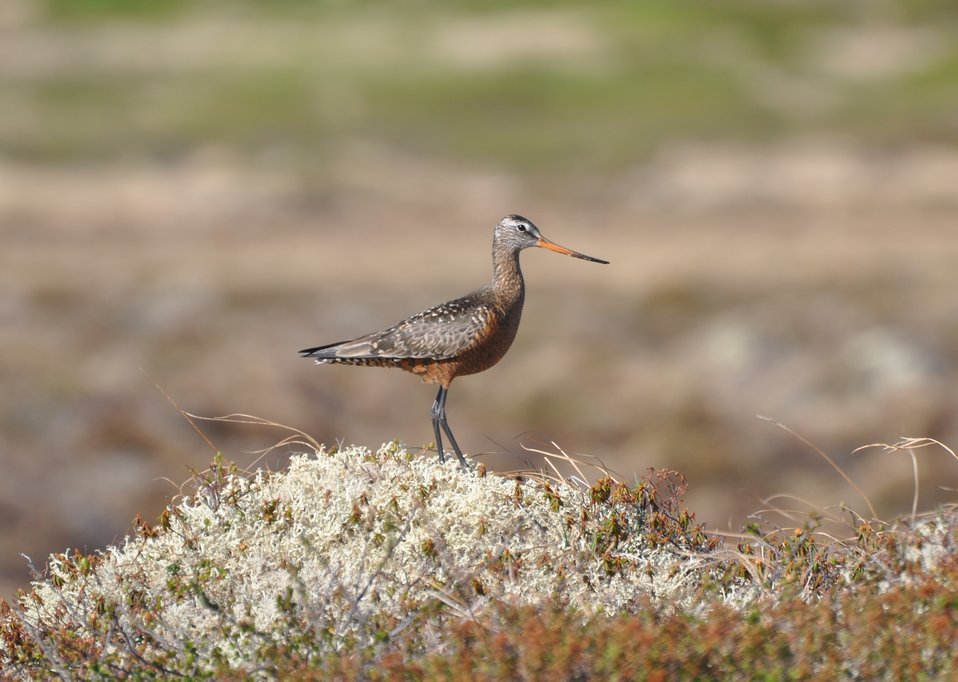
Hudsonian godwit

Andreafsky wilderness, Yukon Delta National Wildlife Refuge